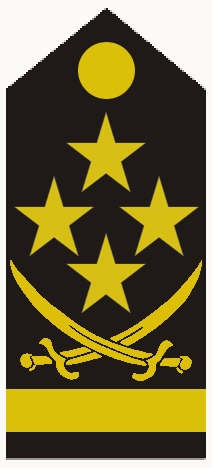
Field Marshal